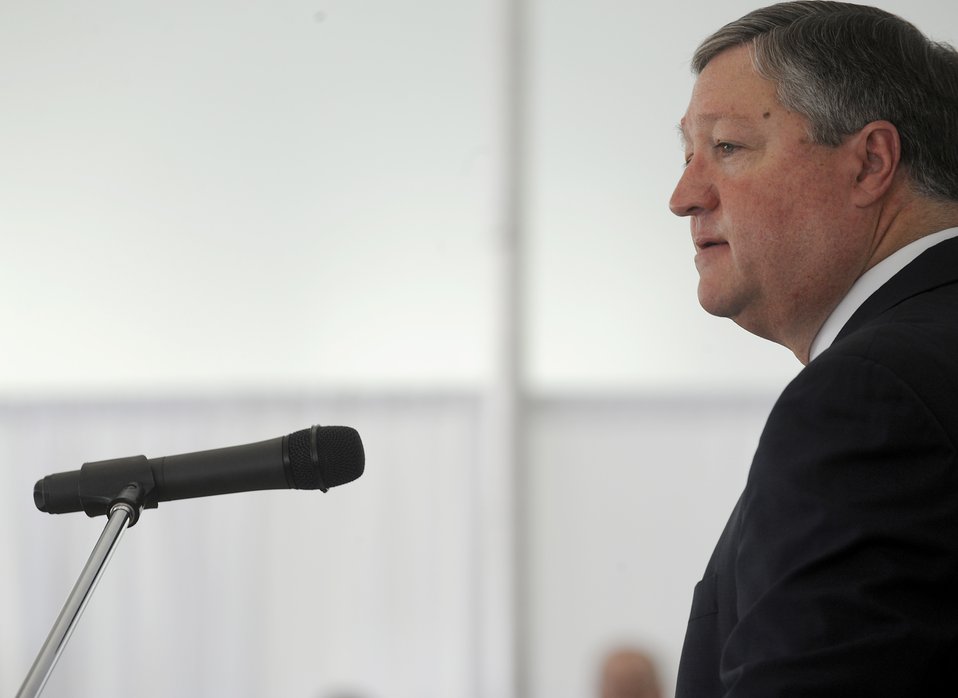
Fisher House Groundbreaking at Dover

Secretary of the Air Force Michael B. Donley speaks to the audience attending the groundbreaking ceremony May 1 for the future Fisher House at Dover Air Force Base, Del. The Secretary co-hosted the ceremony with Air Force Chief of Staff Gen. Norton Schwartz and Kenneth Fisher, chairman of the Fisher House Foundation board of trustees. When construction is completed, this Fisher House will be the first Fisher House to provide hospice services to family members awaiting the return of their fallen heroes from overseas.